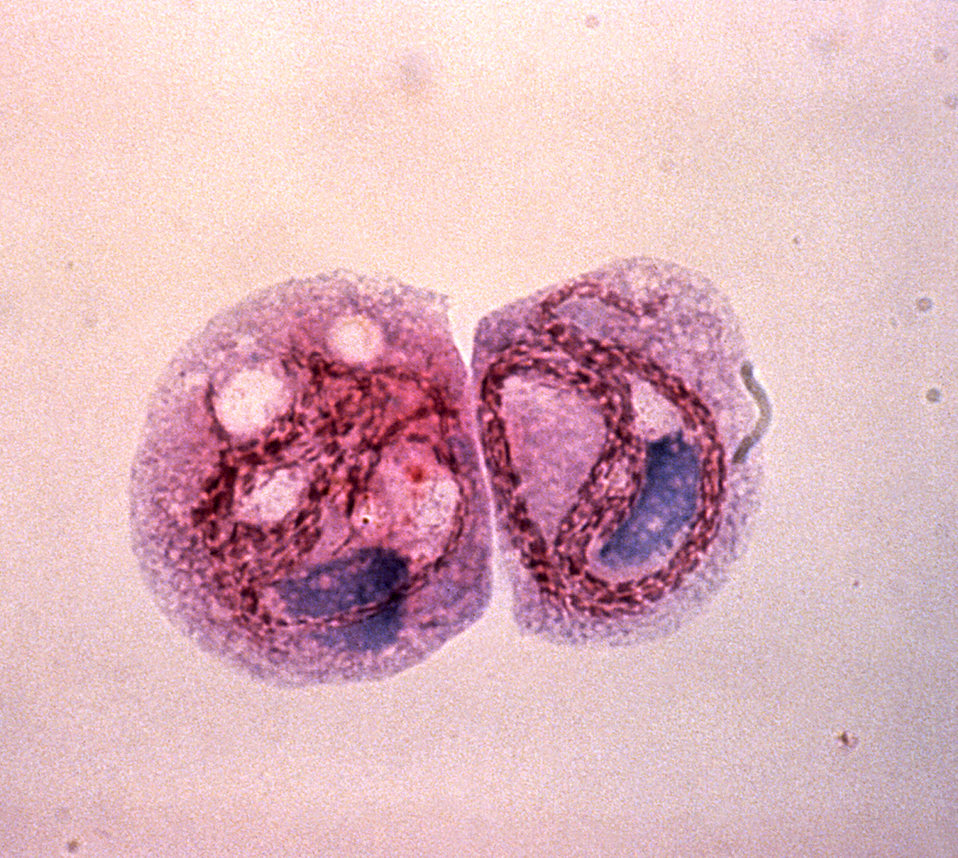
This micrograph depicts two ciliated Tetrahymena pyriformis protozoa containing red chains of intracellular Legionella pneumophila bacteria that are undergoing multiplication.